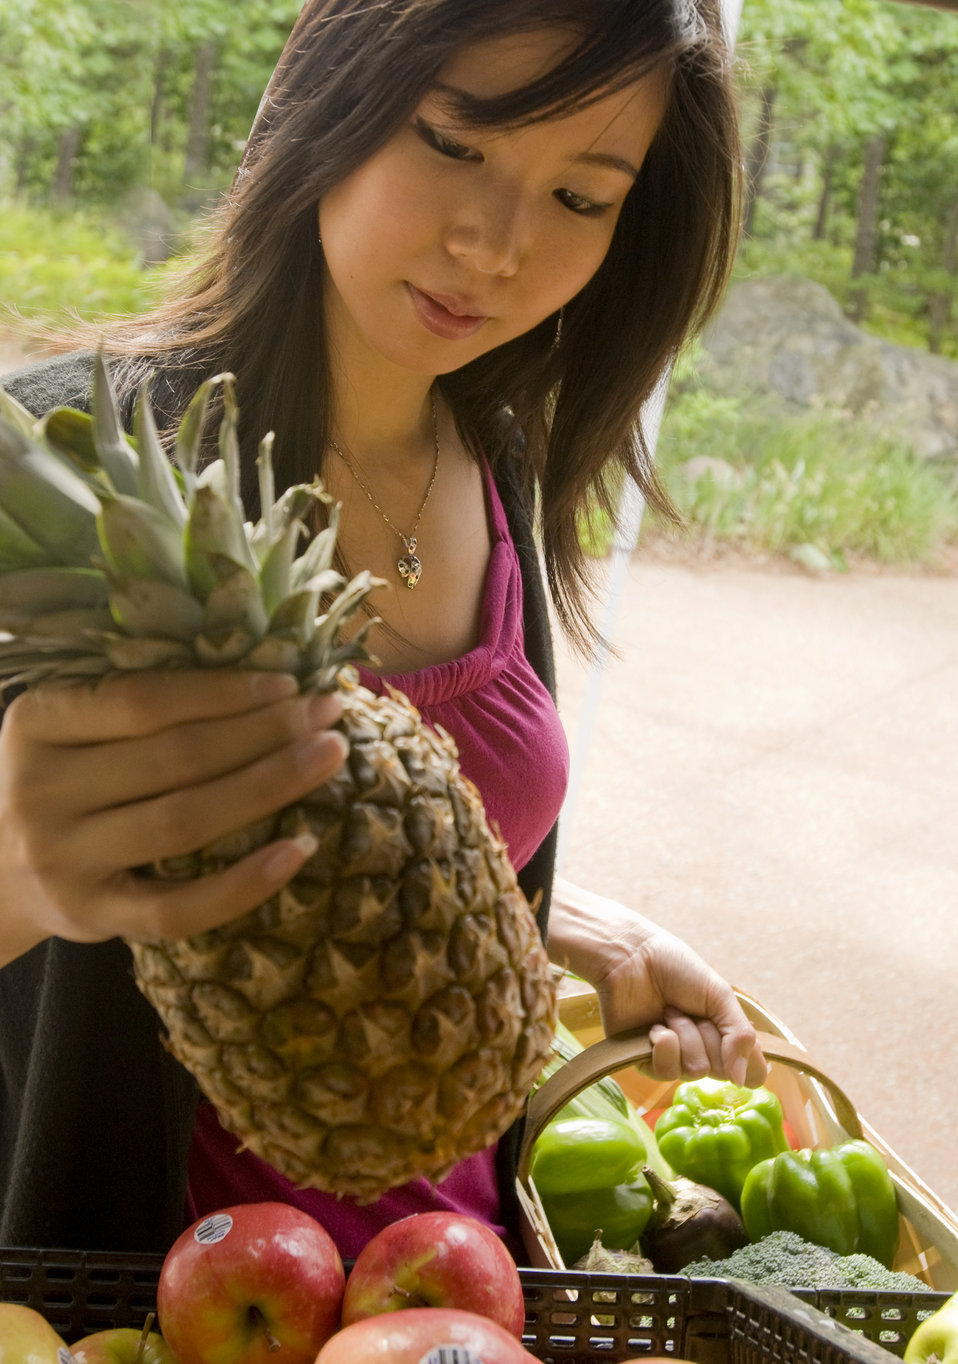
This woman was photographed as she was shopping for groceries at a mobile Georgian farmers market at a point in her activity where she was picking out a ripe pineapple in the market's produce section. Here she appears to have made her choice, holding her pick in her right hand before adding it to a woven wooden basket.